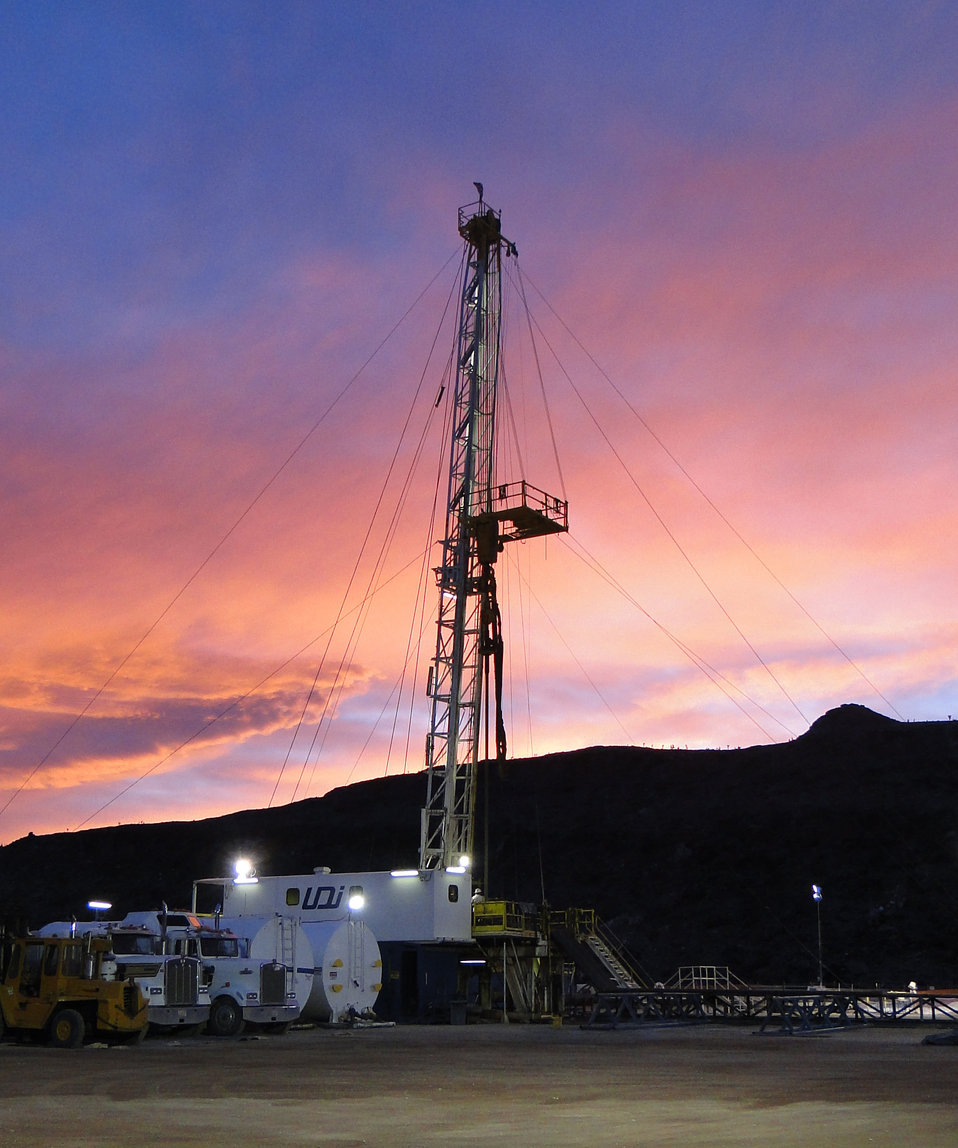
Drilling at NNSS

Groundwater specialists completed the drilling of two characterization wells in the northwestern region of the NNSS known as Pahute Mesa. These wells, each approximately 3,400 feet deep, are part of a larger well network that provides scientists critical data about water chemistry, geology and the potential groundwater flow paths at the NNSS. In this photo, workers drill a well at Pahute Mesa.